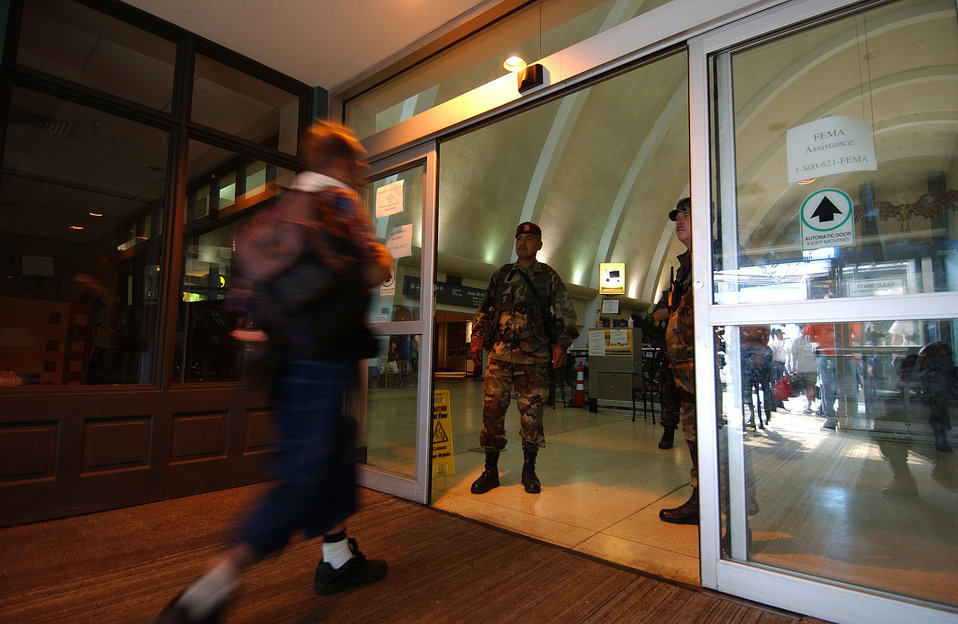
Joint security support

LOUIS ARMSTRONG NEW ORLEANS INTERNATIONAL AIRPORT, La. -- Airmen and Soldiers stand guard at an entry point here Sept. 9. The U.S. military and federal agencies are assisting New Orleans residents with the transition to shelters across the United States following the devastation left by Hurricane Katrina.